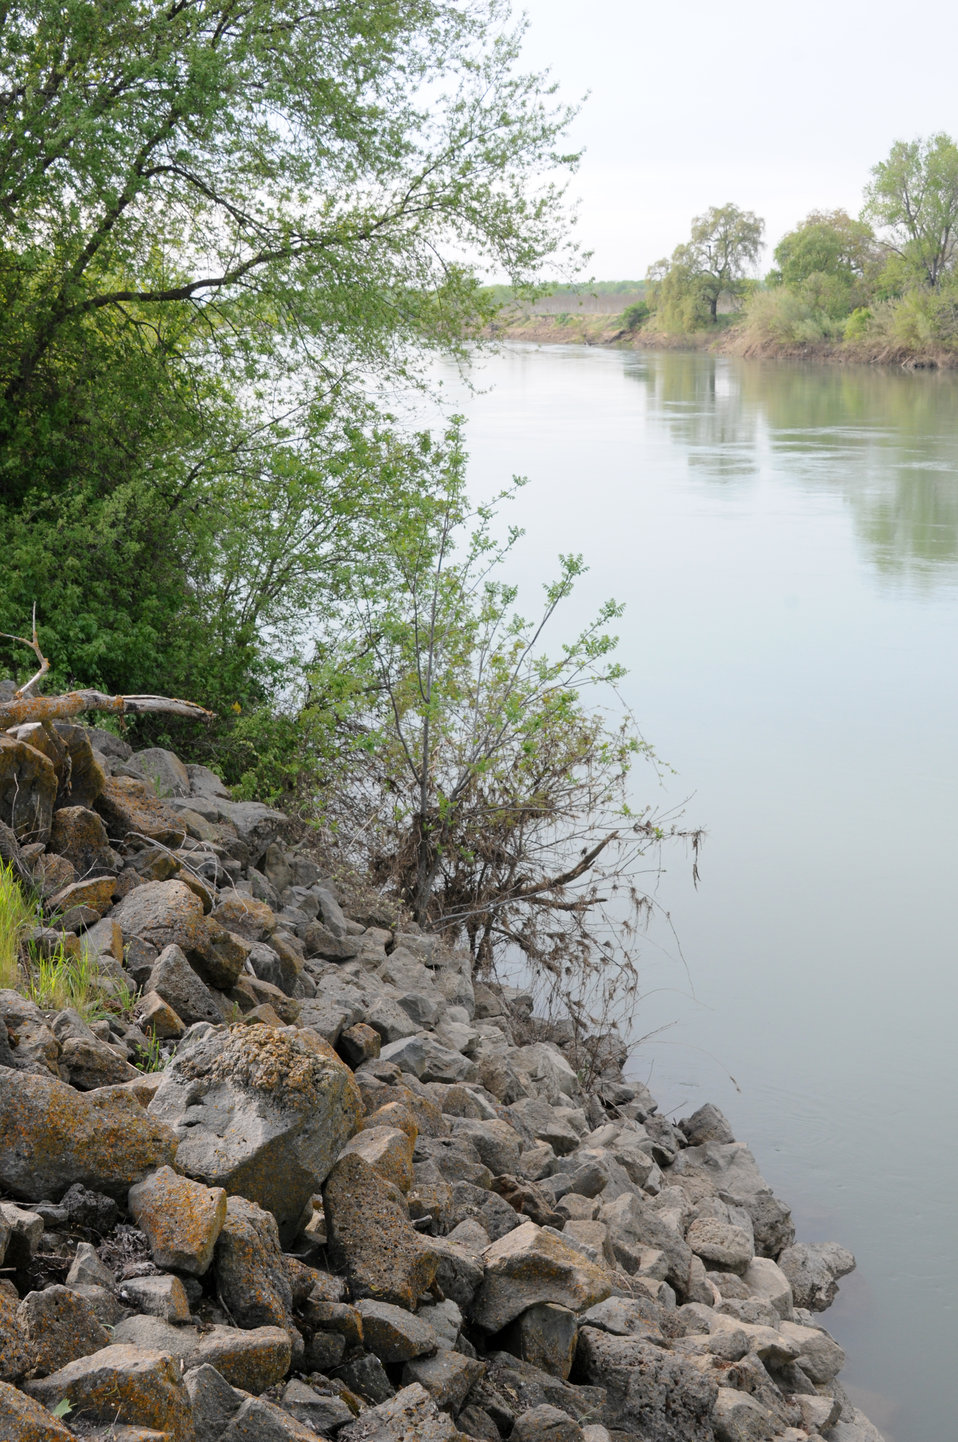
Emergency levee repair

A look upstream of the Sacramento River from a Hamilton City, Calif. shore April 14, 2011. The rock pile (left) is from emergency levee repair circa 1995, said Jose Puente, Hamilton City Community Services District general manager.